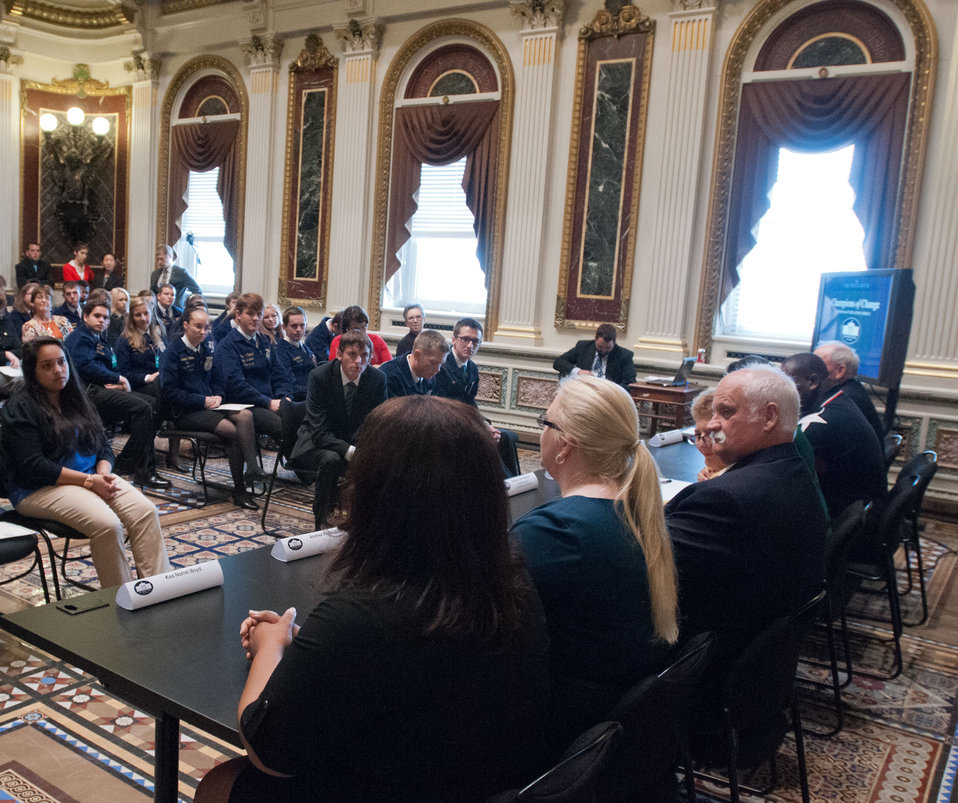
University of Maryland Extension 4-H Educator Andrea Kneer-Rice (second from left) at table, speaks during the Champions of Change Recognition event that recognized 12 members/educators/mentors associated with FFA and/or 4-H in the White House Indian Treaty Room at the Executive Office Building in Washington, D.C. on Tuesday, Oct. 9, 2012. The Champions of Change program was created to honor ordinary Americans doing great work in their communities. Each week, a different sector is highlighted and groups of Champions, ranging from educators to entrepreneurs to community leaders, are recognized for the work they are doing to serve and strengthen their communities.